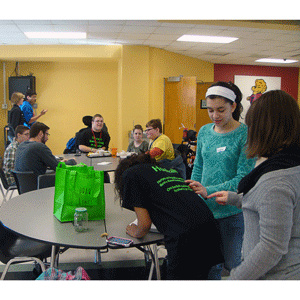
NDFW 2014: Kansas Coverage

Go KFP! Kansas Family Partnership sent a Lawrence High School press release and pitch email about National Drug Facts Week Events to its Lawrence media contacts on Lawrence High School’s activities, the national campaign and KFP’s social media campaign, which resulted in coverage from 6 News Lawrence, KS.